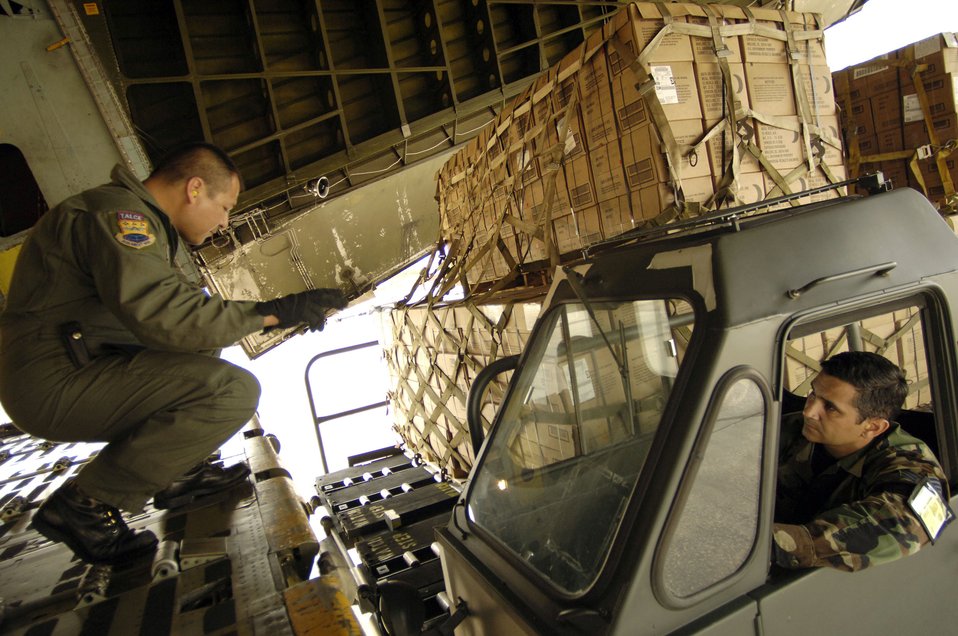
Hurricane Wilma

HOMESTEAD AIR RESERVE BASE, Fla. -- Master Sgt. Dave Delgado (left) directs a K-loader operator as he unloads 26,000 pounds of prepackaged meals from a C-5 Galaxy here. Sergeant Delgado, a loadmaster assigned to the 433rd Airlift Wing, Lackland Air Force Base, Texas, participated in the humanitarian relief effort Oct. 27.